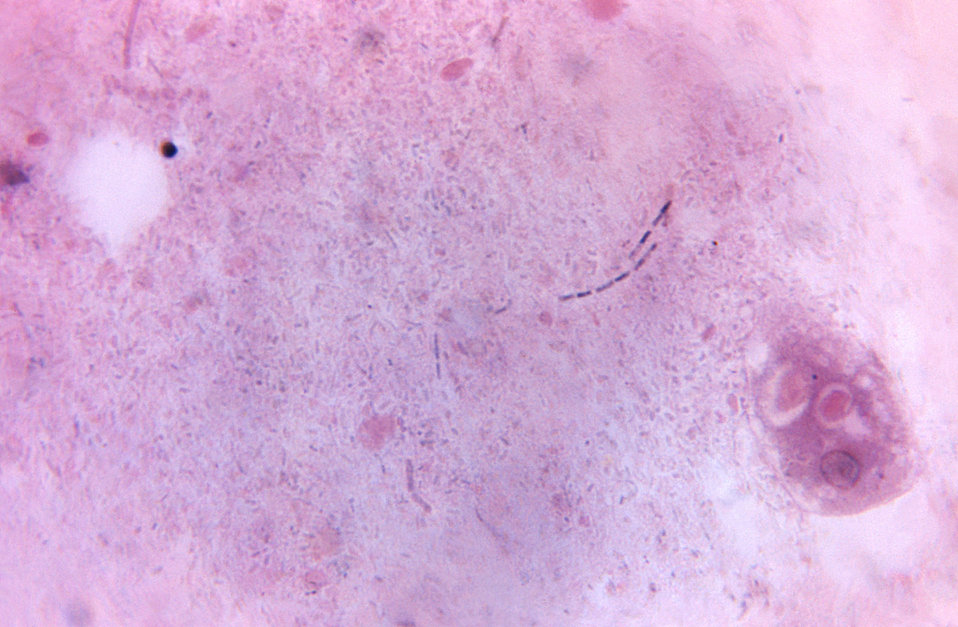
Magnified 675X, this photomicrograph revealed the presence of a parasitic Entamoeba histolytica trophozoite, which contained vacuolated cytoplasm, within which were two red blood cells (RBCs), and a pyknotic body. Entamoeba histolytica/Entamoeba dispar trophozoites have a single nucleus, which have a centrally placed karyosome and uniformly distributed peripheral chromatin. This typical appearance of the nucleus is not always observed as some trophozoites can have nuclei with an eccentric karyosome and unevenly distributed peripheral chromatin. The cytoplasm has a granular or "ground-glass" appearance. E. histolytica/E. dispar trophozoites usually measure 15�m - 20�m (range 10�m - 60�m), tending to be more elongated in diarrheal stool.